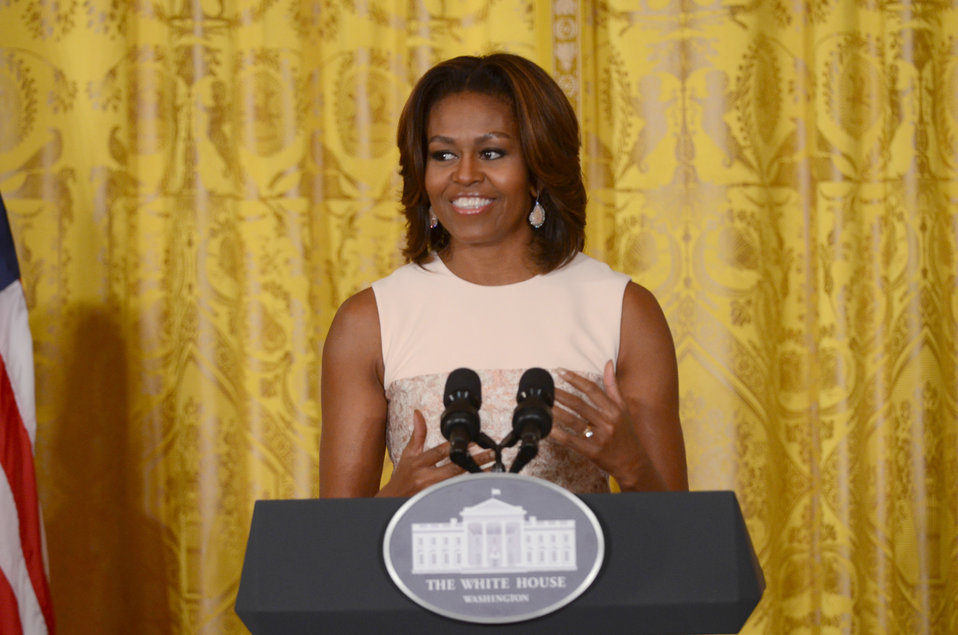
First Lady Michelle Obama announces proposed guidelines for local school wellness policies and roll out of breakfast and lunch programs for schools that serve low-income communities in the East Room of the White House in Washington, D.C. on Tuesday, Feb. 25, 2014. The bipartisan Healthy, Hunger-Free Kids Act of 2010 mandated that the U.S. Department of Agriculture (USDA) set guidelines for what needed to be included in local school wellness policies in areas such as setting goals for nutrition education and physical activity, informing parents about content of the policy and implementation, and periodically assessing progress and sharing updates as appropriate. The proposed guidelines would ensure that foods and beverages marketed to children in schools are consistent with the recently released Smart Snacks in School standards and ensuring that unhealthy food is not marketed to children is one of the First Lady's top priorities. To help schools with the implementation of the school wellness policies, the U.S. Department of Agriculture has launched a new 'School Nutrition Environment and Wellness Resources' website, which includes sample wellness policy language for school districts and a dedicated page of resources for food marketing practices on the school campus.